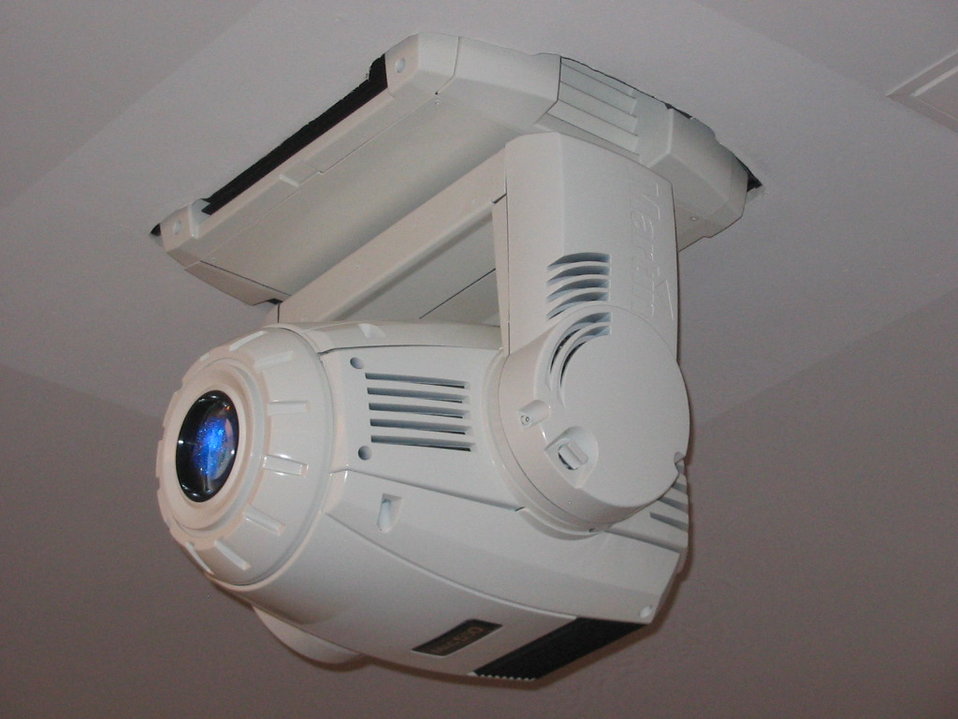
Ein kopfbewegter Scheinwerfer in der Gläsernen Manufaktur in Dresden [English: A MAC 550 automated fixture by Martin Light (an automated fixutre manufacturer)]